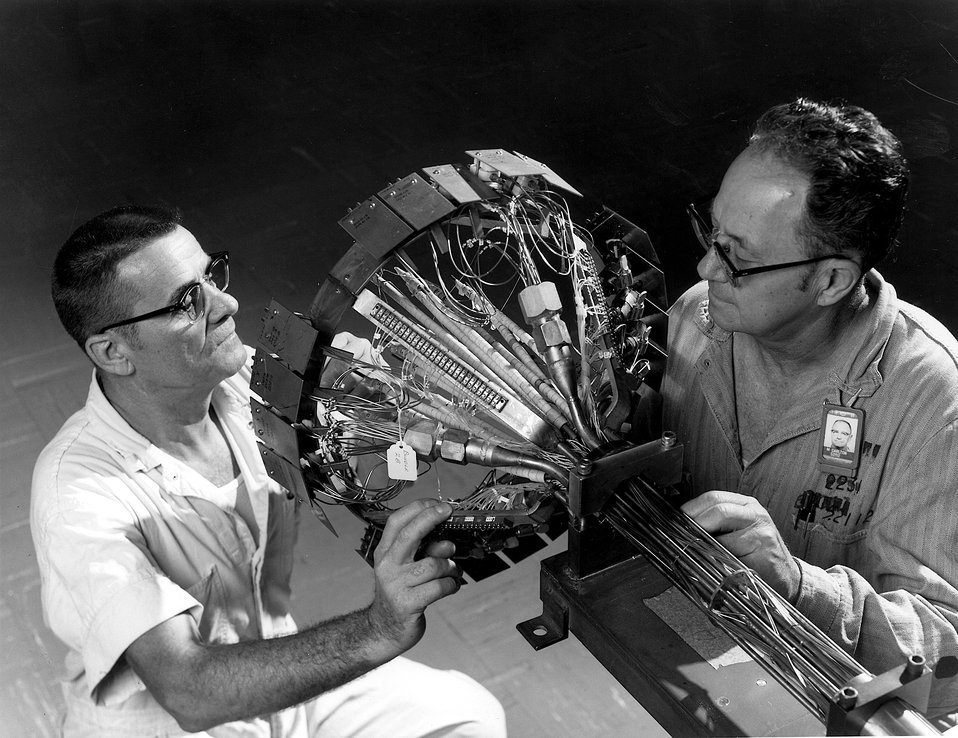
A heavily instrumented bundle of rods, complete with internal heaters, in a component test at Oak Ridge National Laboratory designed to simulate a liquid metal fast breeder fuel sub assembly.